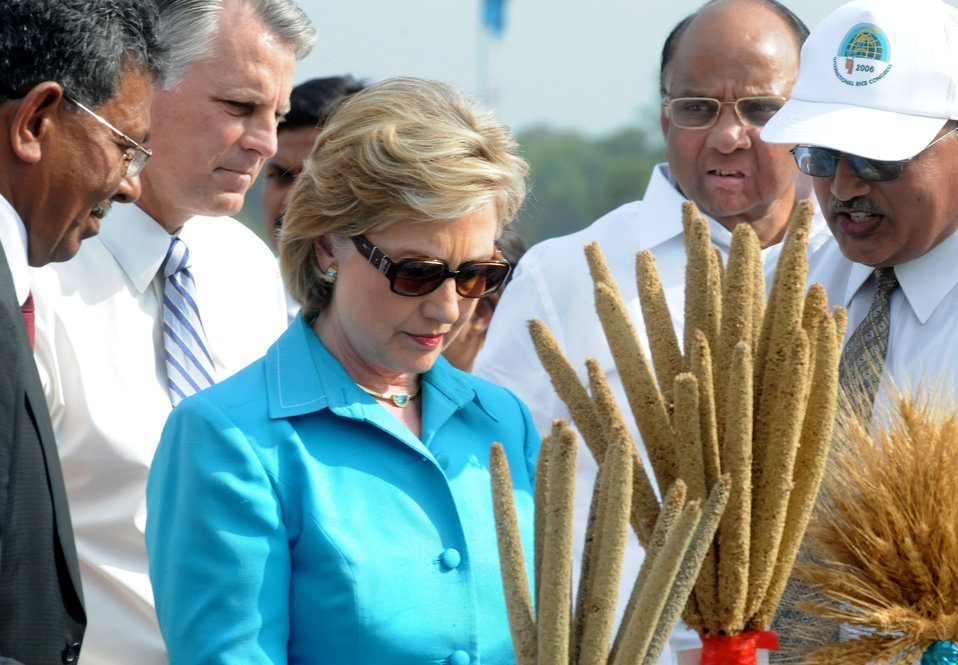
Secretary Clinton Visits Indian Agricultural Research Institute

U.S. Secretary of State Hillary Rodham Clinton, with Ambassador-Designate Timothy J. Roemer, Sharad Pawar, Minister of Agriculture, Consumer Affairs, Food and Public Distribution, and Dr. Mangala Rai, President of the National Academy of Agricultural Sciences, examines wheat samples at the Indian Council for Agricultural Research’s (ICAR) Indian Agricultural Research Institute (IARI) in Pusa, New Delhi, India July 19, 2009.